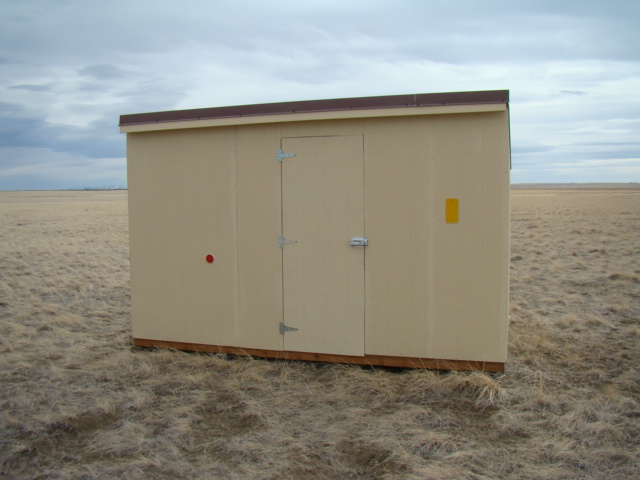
Sharp-tailed Grouse 'Grouse House'

The mating routine of sharp-tailed grouse involves males displaying communally at a traditional site (one used year after year). This site is known as a “lek.” Males compete for mates by performing a ritualized dance in conjunction with calling (often a booming sound) and inflating purplish air sacs along their necks. Females approach the edge of the lek, observe and eventually select a dance participant to mate with.